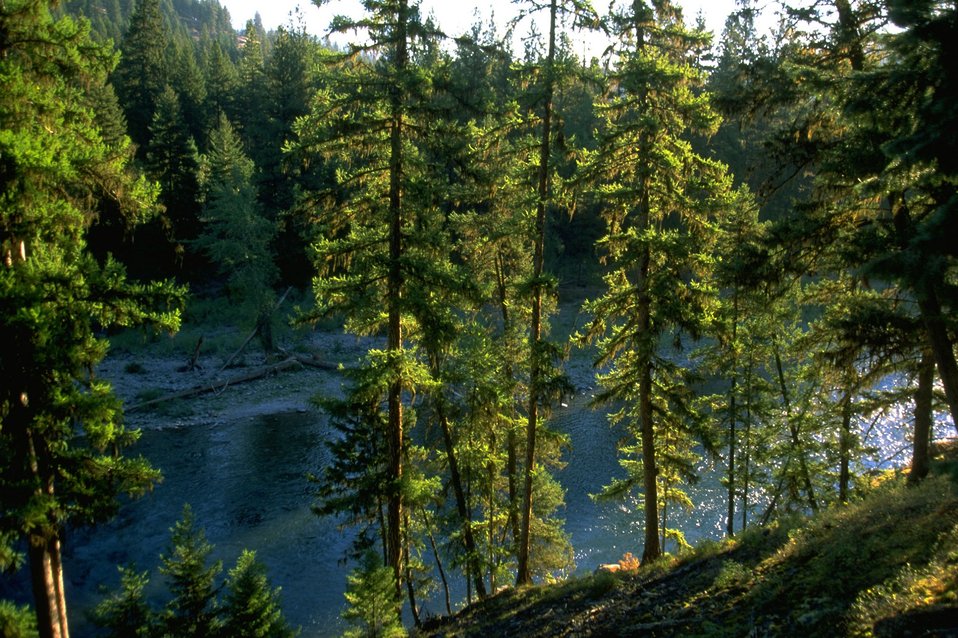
Forest land along the Blackfoot River